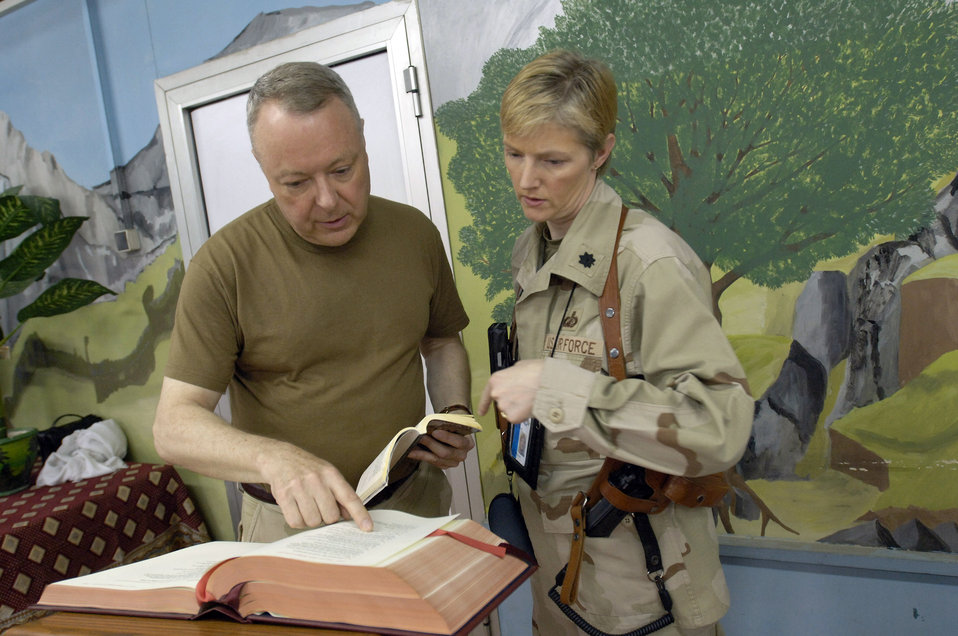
Chaplain shares faith in Afghanistan

Chaplain (Lt. Col.) Michael Weber points out a passage for Lt. Col. Catherine McLoud to read July 23 during the Catholic daily mass at Camp Eggers in Kabul, Afghanistan. Besides providing the various chaplain services to the joint military community at Camp Eggers, Chaplain Weber also serves as a mentor to the Afghan Religious and Cultural Affairs officers, who are the Afghan equivalent to U.S. military chaplains. Chaplain Weber is deployed from Hickam Air Force Base, Hawaii. Colonel McLoud is deployed from Davis-Monthan AFB, Ariz.